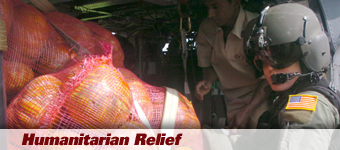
Humanitarian relief history spotlight for December